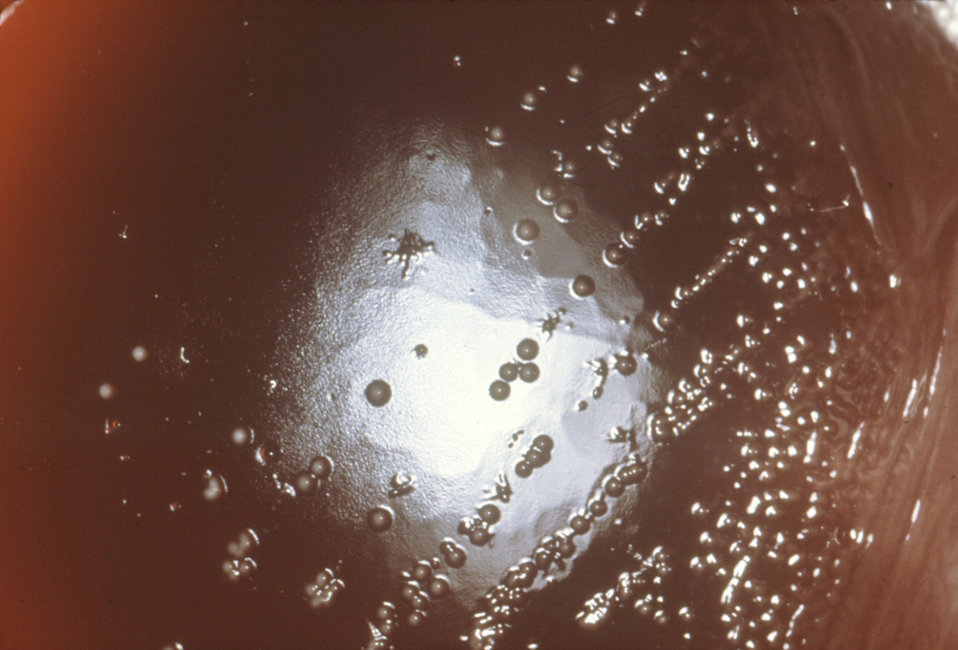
E. coli, F. mortiferum, P. vulgaris, and C. perfringens were grown on a 24hr blood agar culture.